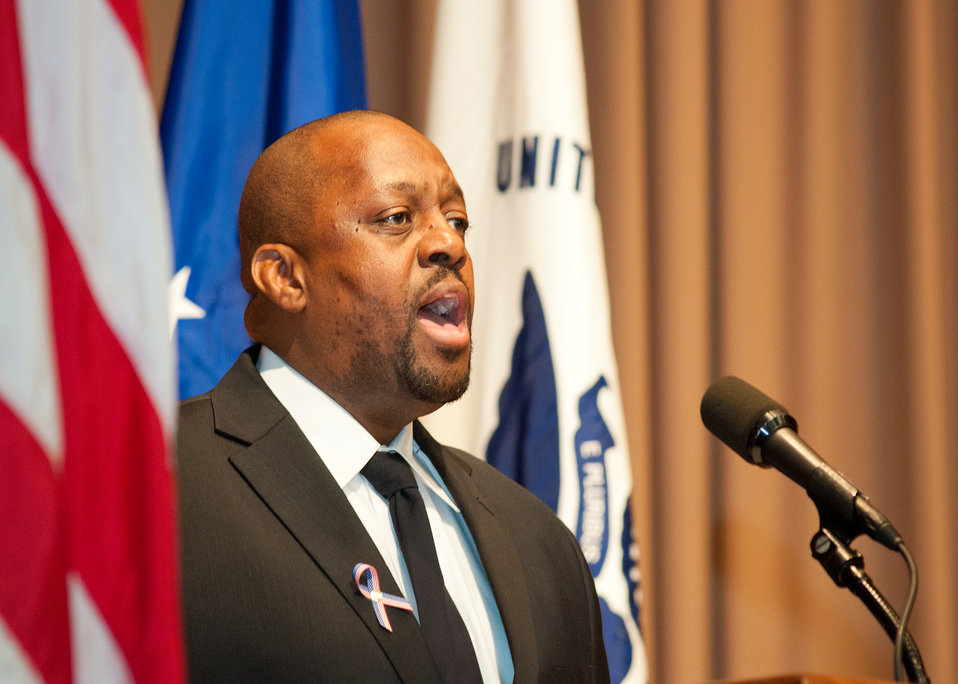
Kenneth Vernon, Air Force Tech Sergeant, retired, Foreign Agricultural Service sings the national anthem at the United States Department of Agriculture Veteran’s Day celebration in Washington, DC, Thursday, November 10, 2011.